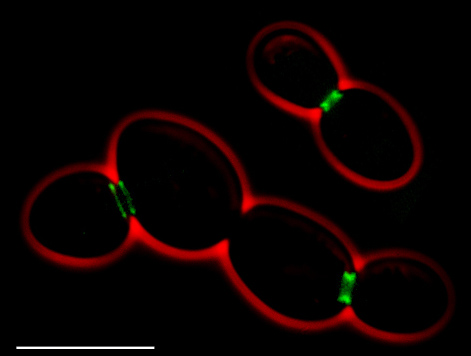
Fluorescent micrograph of Saccharomyces cerevisiae with GFP-tagged septins.
Green: AgSEP7-GFP (septin), red: outline of the cell (phase contrast), scale bar: 10μm Português: Septinas em Saccharomyces cerevisiae. Em vermelho: contorno das células. Em verde: septinas marcadas com GFP (AgSEP7-GFP). Microscopia de contraste de fase. Barra de escala (10μm).